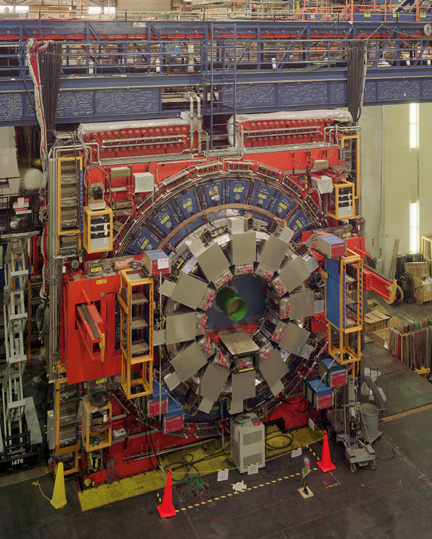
Fermi National Accelerator Laboratory's Collider Detector (CDF) collaboration have made the world's most precise measurement by a single experiment of the mass W boson, the carrier of the weak nuclear force and a key parameter o f the Standard Model of Particles and forces. The W-mass value leads to an estimate for the mass of the yet-discovered Higgs boson that is lighter than previously predict.